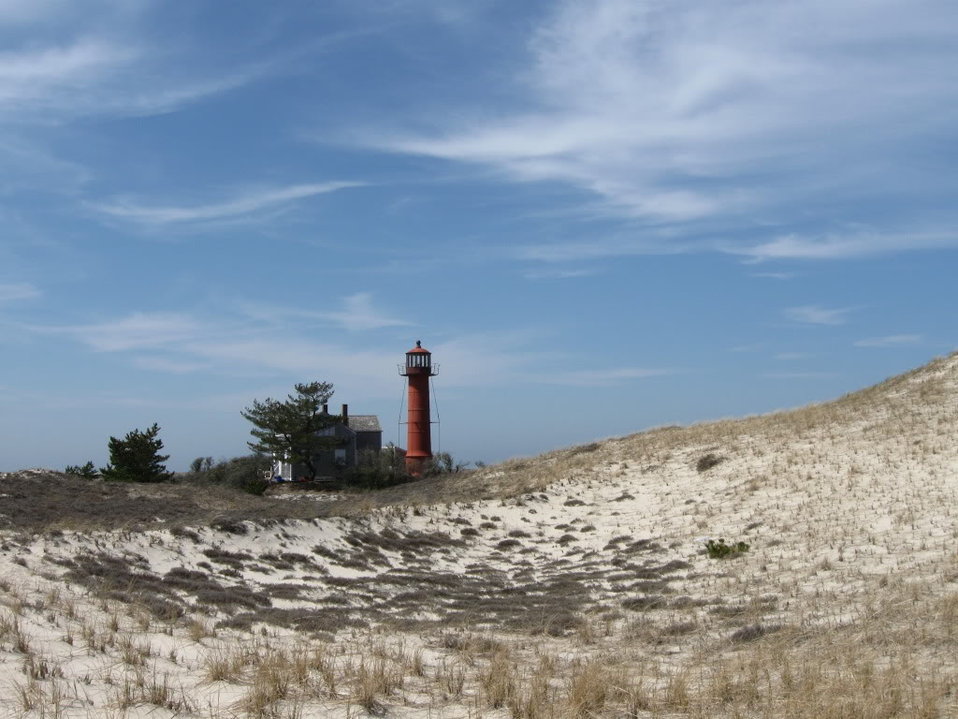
Lighthouse at Monomoy National Wildlife Refuge.

Credit: Zachary Cava/USFWS

Monomoy National Wildlife Refuge is part of the Eastern Massachusetts National Wildlife Refuge Complex.